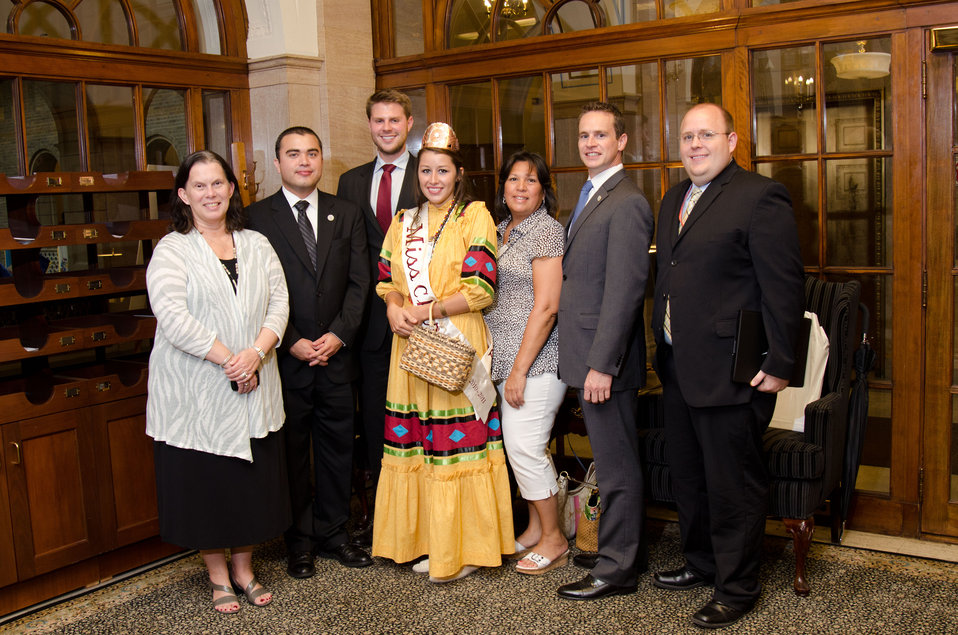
Miss Cherokee 2010-2011 Brooke Hudson and officers of the Cherokee nation met with U.S. Department of Agriculture Secretary Tom Vilsack, Under Secretary for Food, Nutrition and Consumer Services Kevin Concannon, Under Secretary for Rural Development Dallas Tonsager, Agriculture Chief of Staff Krysta Harden; Senior Advisor to Agriculture Secretary with the USDA Office of Tribal Relations Janie Hipp (left) and Agriculture Deputy Under Secretary for Food, Nutrition and Consumer Services Janey Thornton in Washington, DC, on Tuesday, August 9, 2011. During the meeting Miss Hudson presented Secretary Vilsack with a book called the 'Trails of Tears,' the relocation that included the movement of the Cherokee Nation in 1938 from the southeastern United States to Oklahoma. Hudson had completed a cycling journey along the same route. The trip took her more then 20 days to complete. She told of how the experience was both physically and emotionally demanding.